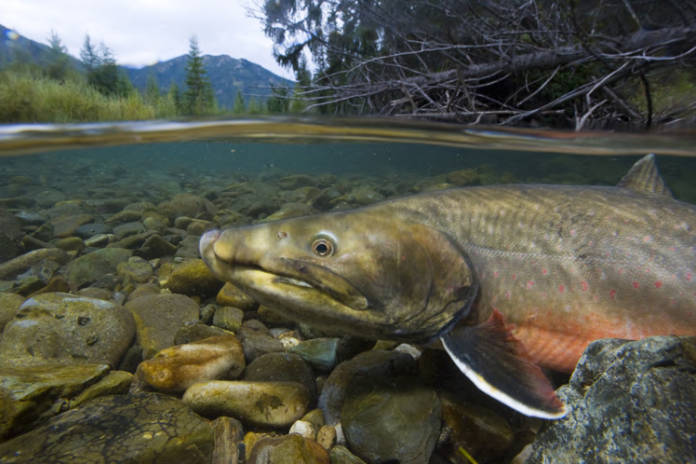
Bull Trout Underwater

Region 6 bull trout coordinator Wade Fredenberg teamed with noted Geographic photographer Joel Sartore in 2009 to capture underwater and aquarium-staged shots of bull trout in British Columbia’s Wigwam River drainage, the headwaters of the Kootenai River, known as the “crown jewel” of bull trout spawning areas.